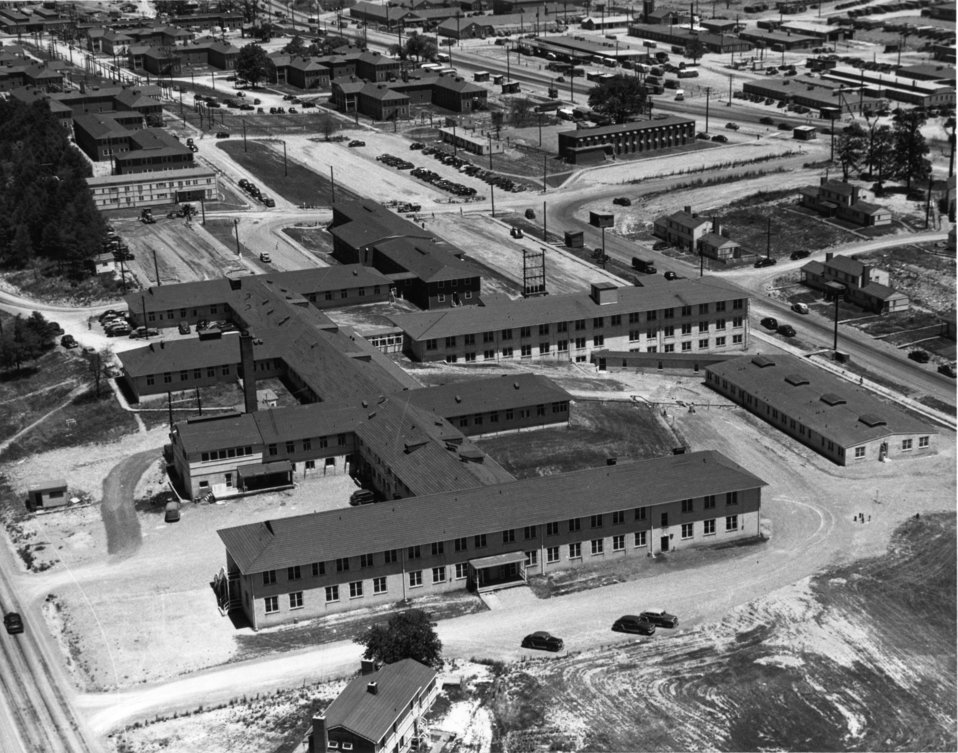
Aerial of Oak Ridge